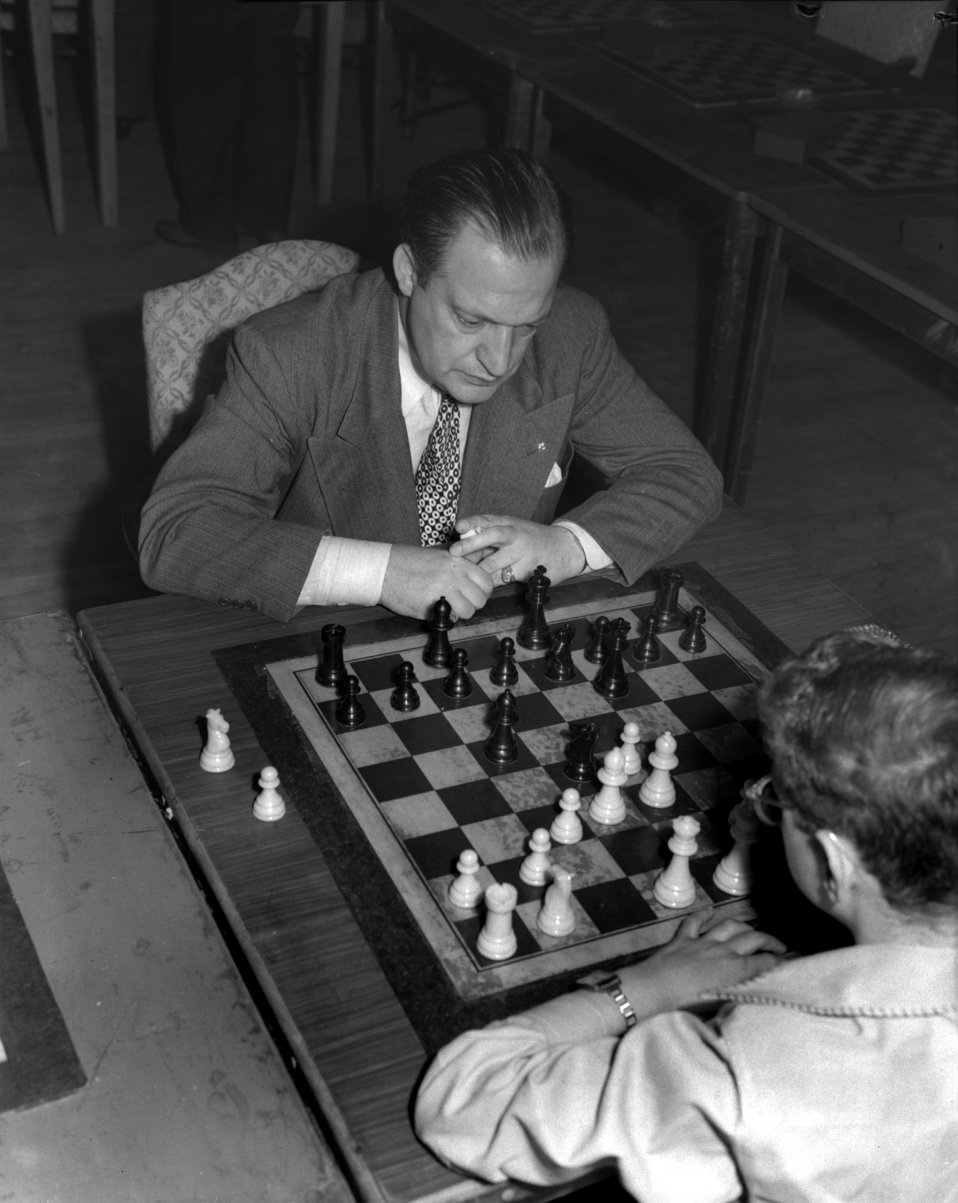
Chess expert George Koltanowski

4269a DOE photo by Ed Westcott
Oak Ridge Tennessee 1-26-1948